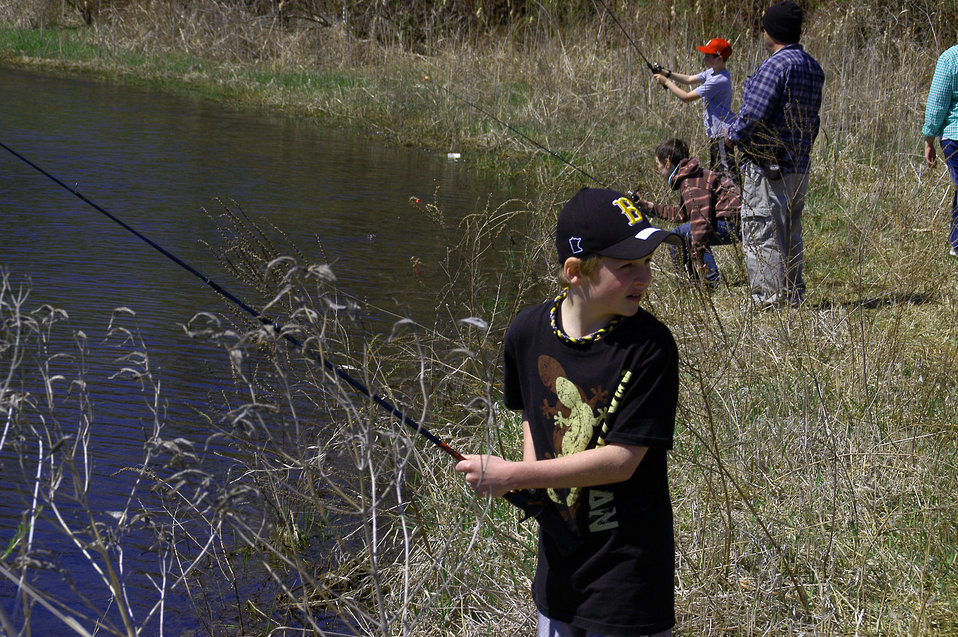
Student Fishes at the Far Bass Ponds